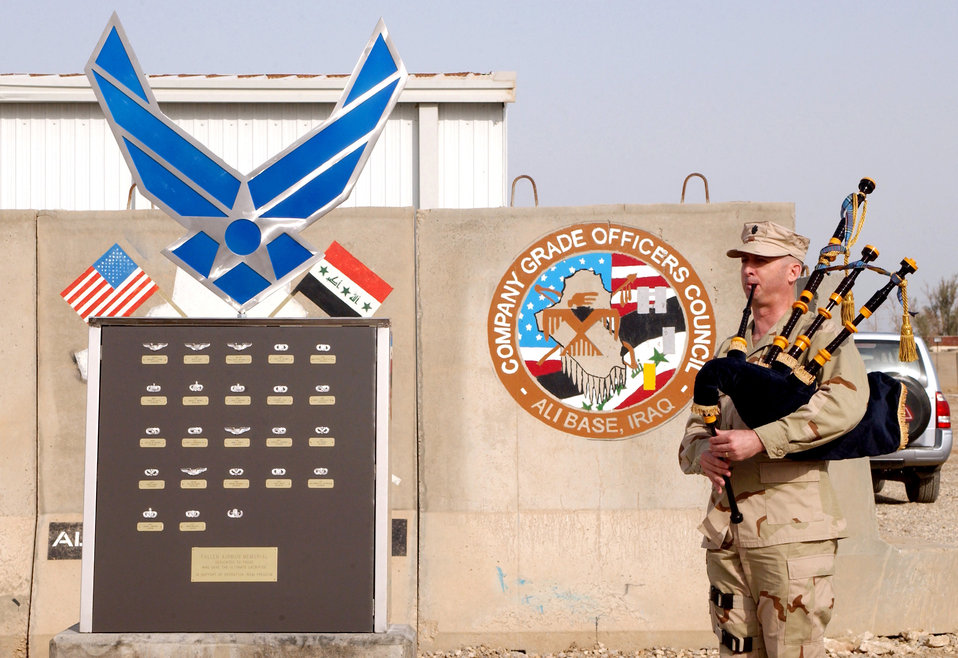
Fallen Airman Memorial recognized

Lt. Col. Dave Kolmer plays the bagpipes during a recognition ceremony for the Fallen Airman Memorial on Wednesday, April 26, 2006, at Ali Base, Iraq. The memorial is dedicated to those who made the ultimate sacrifice in support of Operation Iraqi Freedom.